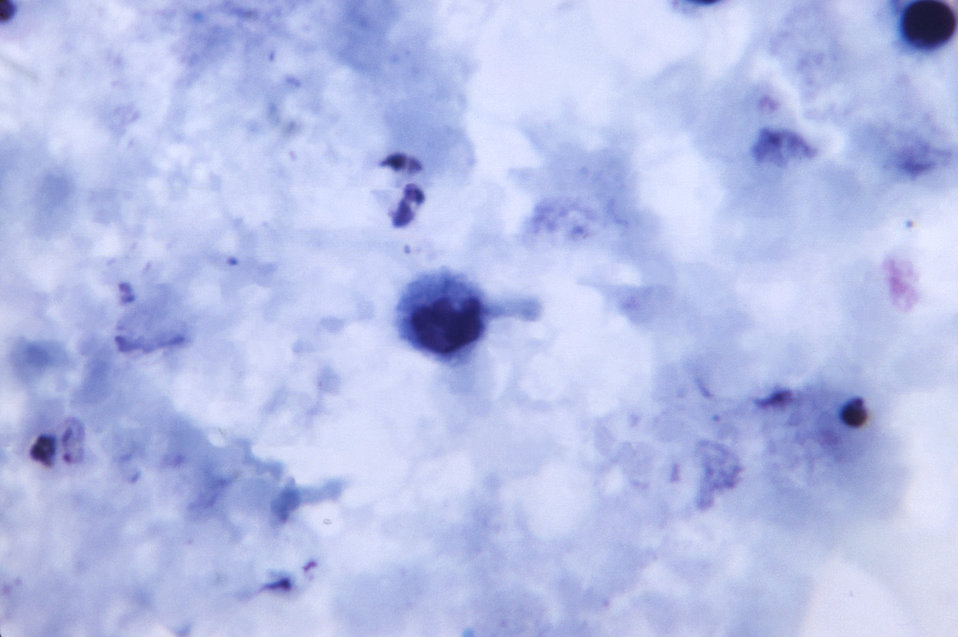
Magnified 1125X, this thick film photomicrograph revealed the presence of a growing Plasmodium vivax trophozoite. There appeared to be no evidence of Sch�'s dots.